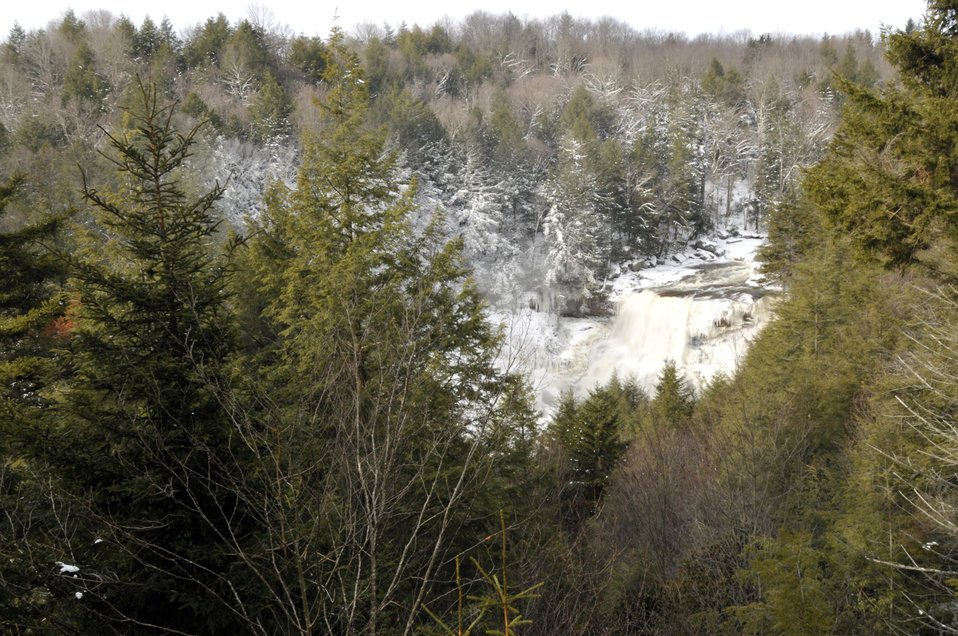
Snow covers the Monongahela National Forest in Davis, West Virginia on January 29, 2010.